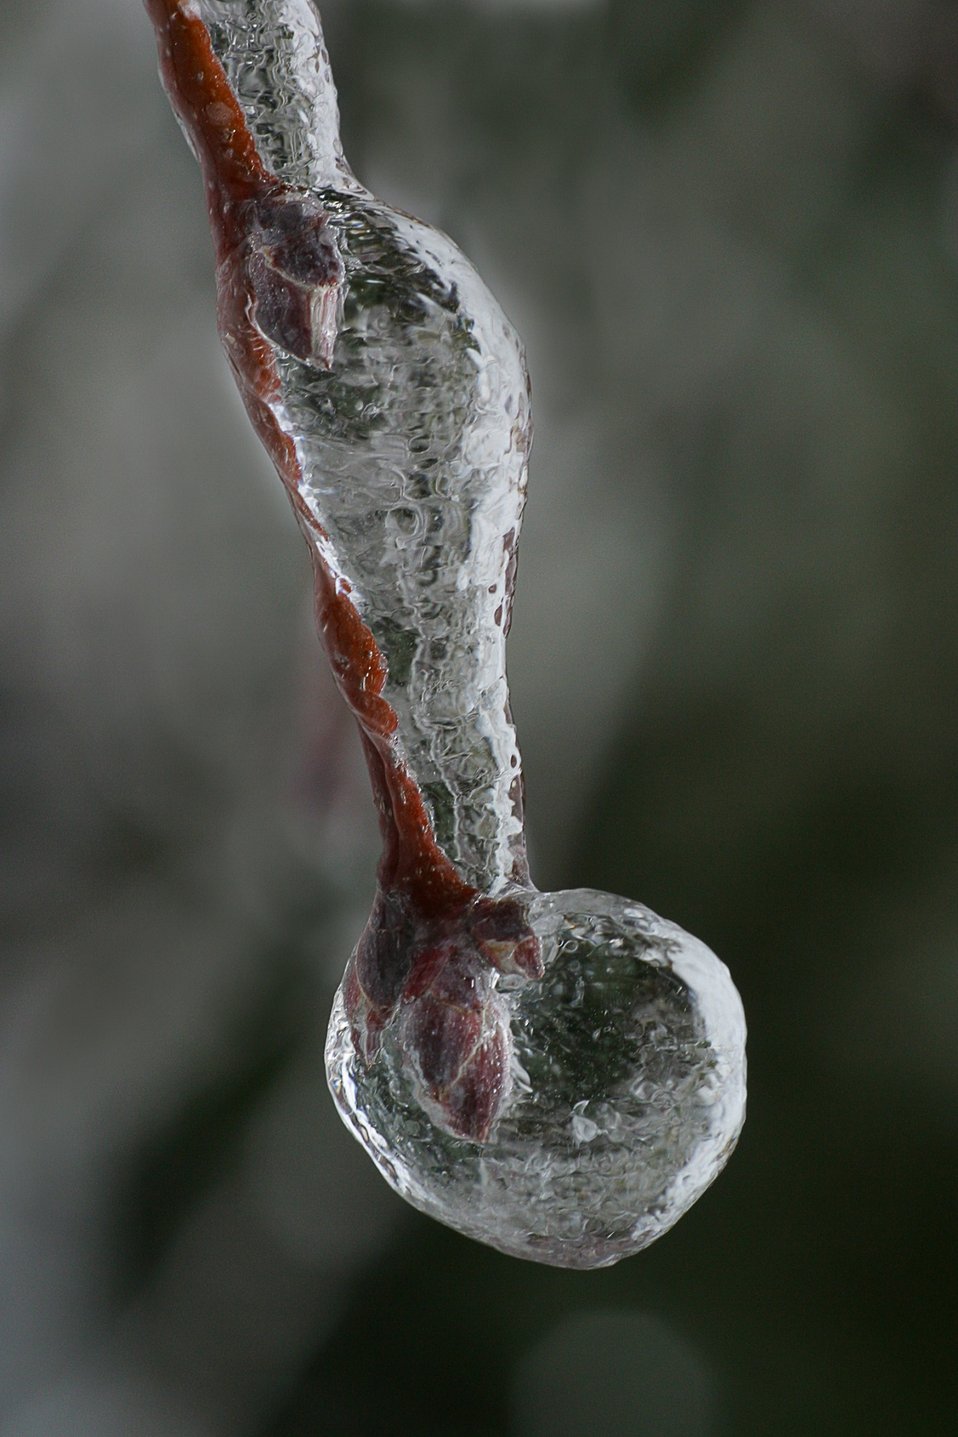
Ice on Service Berry branch.